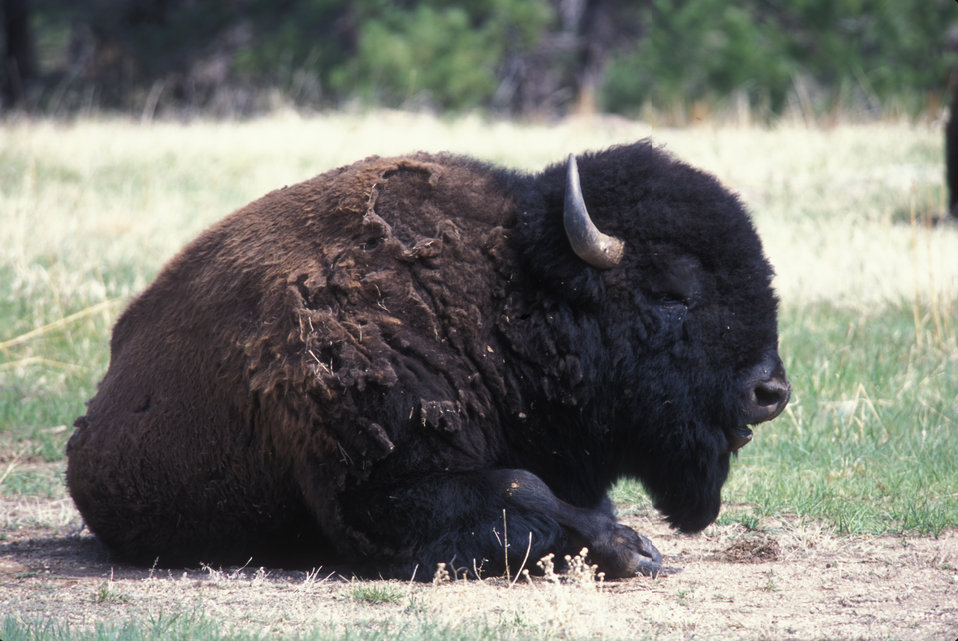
Bison resting in grasses

Bison rests in the grass at Custer State Park